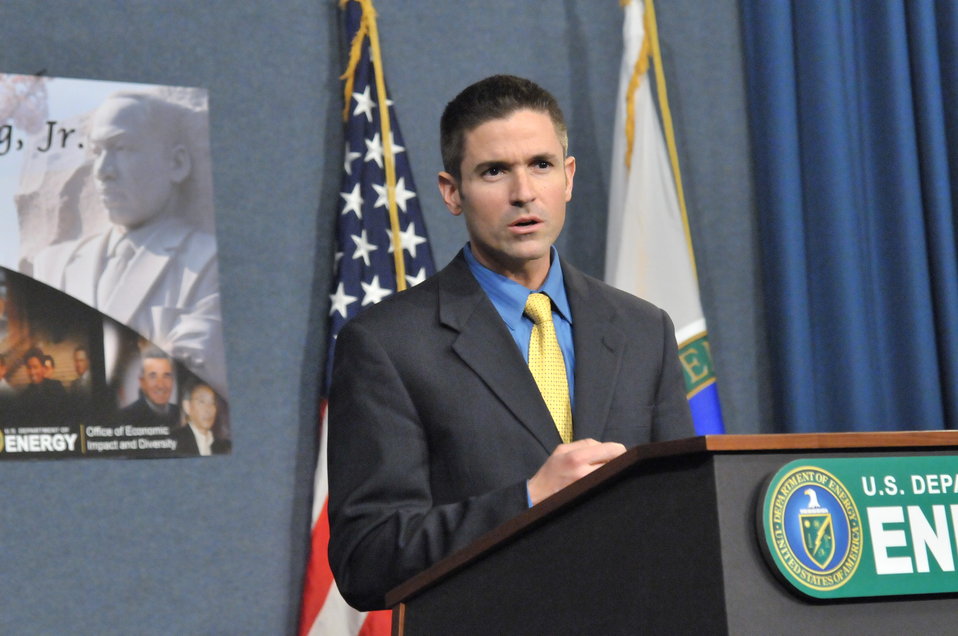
DEPARTMENT OF ENERGY -MARTIN LUTHER KING / BLACK HISTORY MONTH COMMEMORATIVE PROGRAM WITH DOE SECRETARY E. MONIZ IN ATTENDANCE